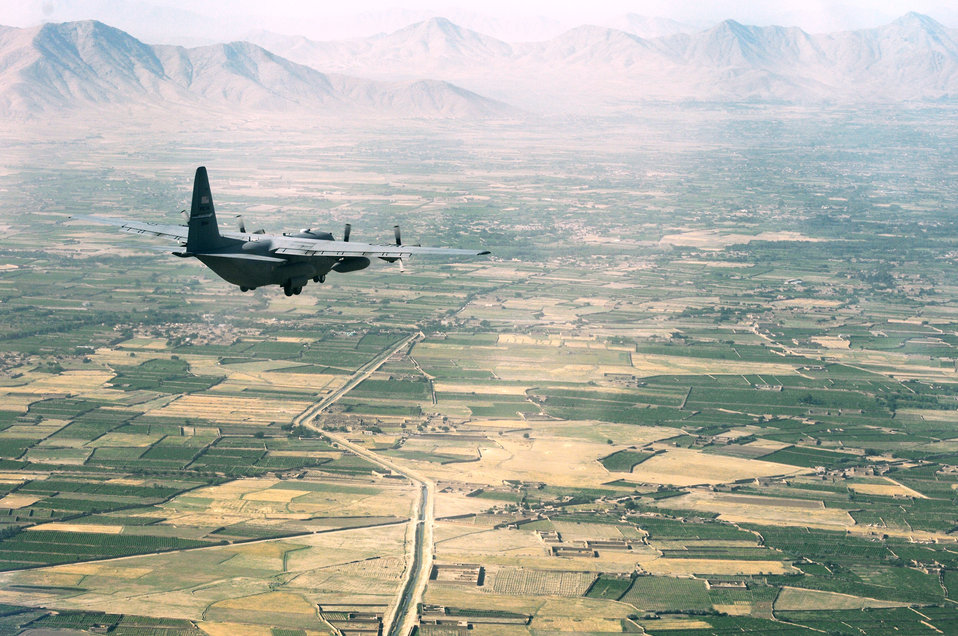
Special delivery

A C-130 Hercules flies above Afghanistan June 22, 2011, en route to deliver supplies to a forward-operating base.